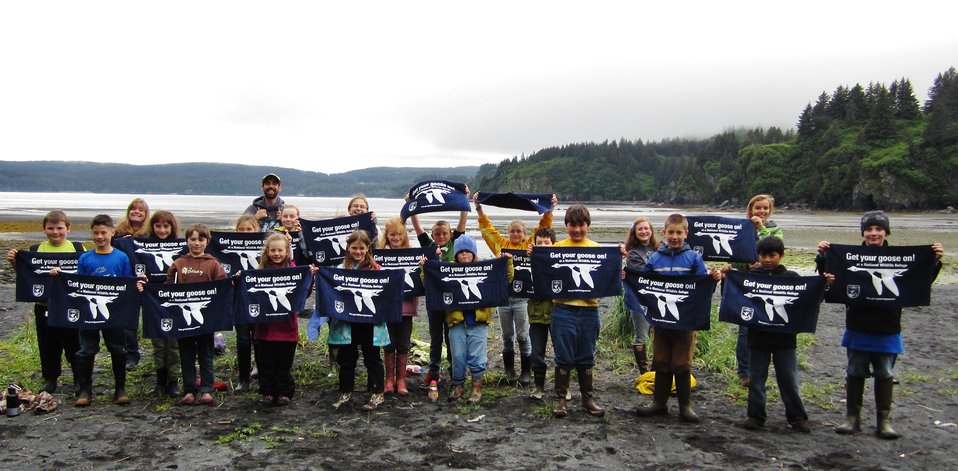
Get Your Goose On! - Alaska Style

Kodiak Refuge Summer and Science Art Camp.

Campers: McKenna Donohue, Bailey Mullen, Solomon Himelbloom, Tymber Bashem, Gage Johnson, Dominic Conol, Anastasia Gauthier, Abigail Groncki, Ashley Cowin, Leslie Spear, Brayden Pfister, Myah Morrison, Dylan Morrison, Olivia Young, Samantha Burnside, Tito Sabangan, Ava Pruitt, Greyson Lincoln. USFWS staff/volunteers: Kristen Riesberg, Ali Sutton, Rory Psotka and Kari Eschenbacher.

Credit: Kari Eschenbacher / USFWS

The Kodiak National Wildlife Refuge is a United States National Wildlife Refuge in the Kodiak Archipelago in southwestern Alaska, United States.

The Kodiak National Wildlife Refuge includes the southwestern two-thirds of Kodiak Island, Uganik Island, the Red Peaks area of Afognak Island and all of Ban Island in the archipelago. It encompasses 1,990,418 acres (8,054.94 km2).[2] The refuge is administered from offices in Kodiak.

The refuge contains seven major rivers and about 100 streams. It is a spawning ground for all six species of Pacific Ocean salmon, trout and several other fish species, as well as a nesting ground for 250 species of bird, many of which feed on salmon. The refuge has only six native species of mammals: Kodiak brown bear, red fox, river otter, ermine, little brown bat and tundra vole. The non-native mammals Sitka deer, mountain goat, Roosevelt elk, snowshoe hare and beaver were introduced to the archipelago between the 1920s and 1950s and are now hunted and trapped.

The climate of the refuge is that of southern Alaska, mild and rainy. Many areas in the refuge are densely forested with Sitka Spruce at lower elevations. There are grasslands in drier areas and at higher elevations. The refuge contains several small glaciers.